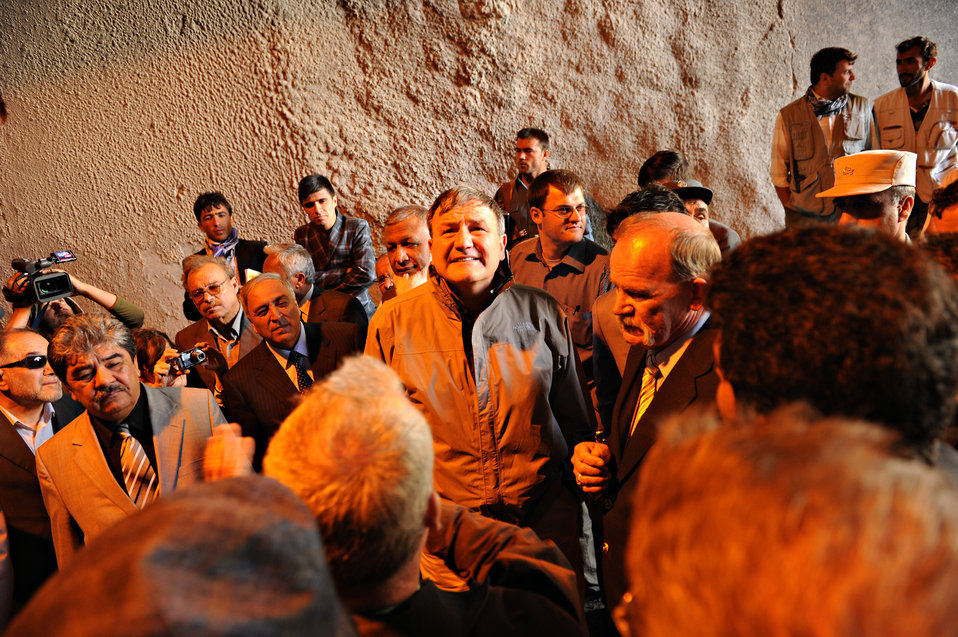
U.S. Ambassador Karl W. Eikenberry attends a ceremony to mark the beginning of renovations at the Salang Tunnel on the border of Parwan and Baghlan Provinces, Afghanistan, on Wednesday, June 15, 2011. (S.K.Vemmer/Department of State)